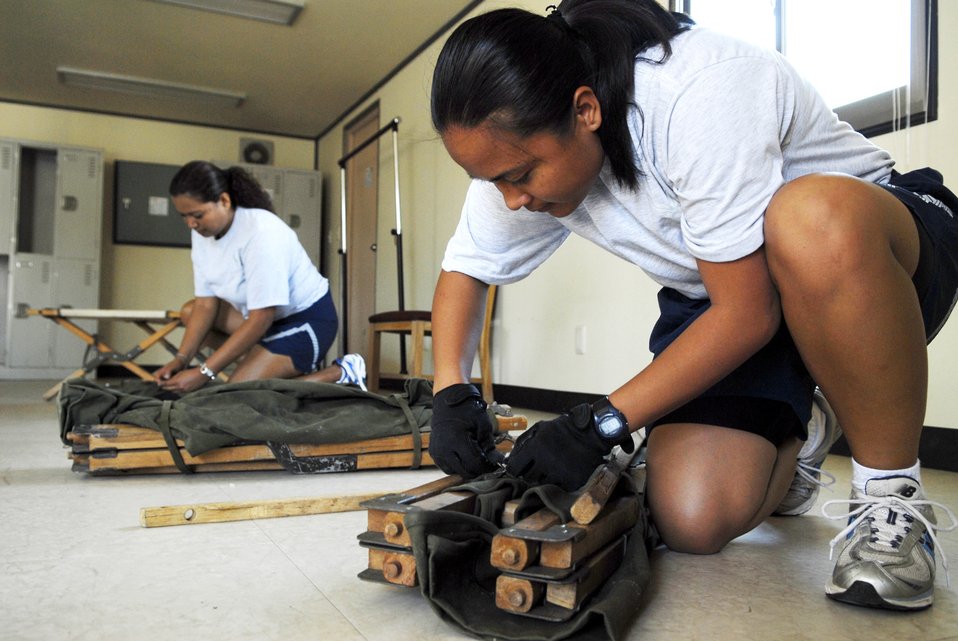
Preparing a city

Staff Sgt. Venessa Salas, (right), and Staff Sgt. Cindy Fejaran unpack and assemble cots July 29 in preparation for Ulchi Freedom Guardian, a joint bilateral exercise set to start in August at Osan Air Base, South Korea. More than 550 military members will participate in the exercise. Sergeants Sala and Fejaran are deployed here from the 254th Force Support Squadron from Andersen Air Base, Guam.